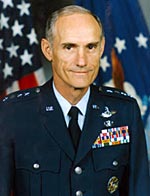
General Merrill A. McPeak

1990's -- General Merrill A. McPeak was the 14th chief of staff of the Air Force.